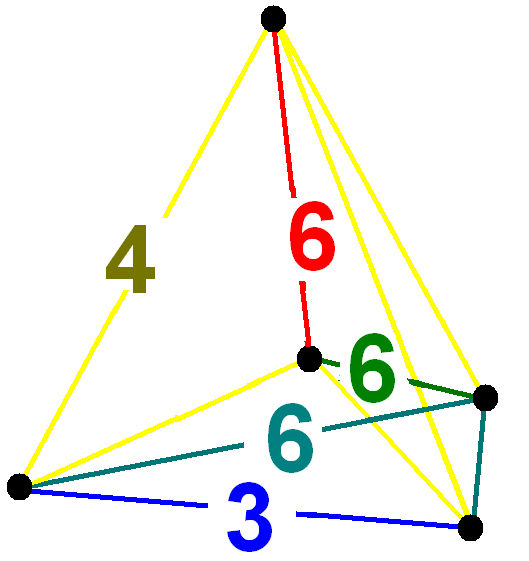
Runcicantitruncated 5-simplex vertex figure